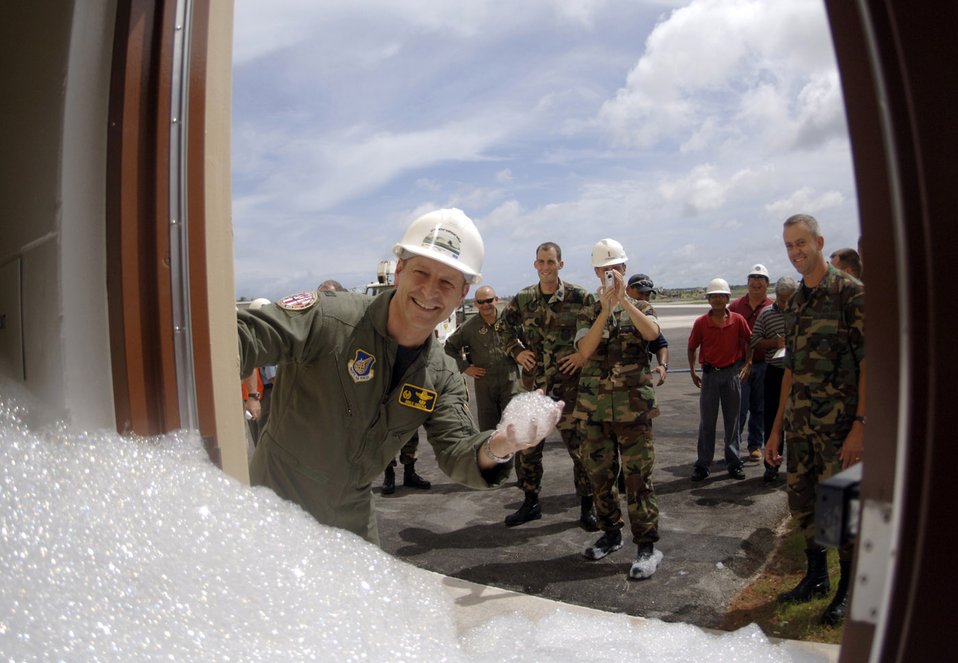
Foam suppression

ANDERSEN AIR FORCE BASE, Guam -- Col. Michael Boera checks out foam seeping out a side door during test and evaluation of a high-expansion foam fire suppression system inside a newly built aircraft maintenance hangar here. The system helps fight fires by covering the hangar with fire-retardant foam. Colonel Boera is the 36th Air Expeditionary Wing commander.